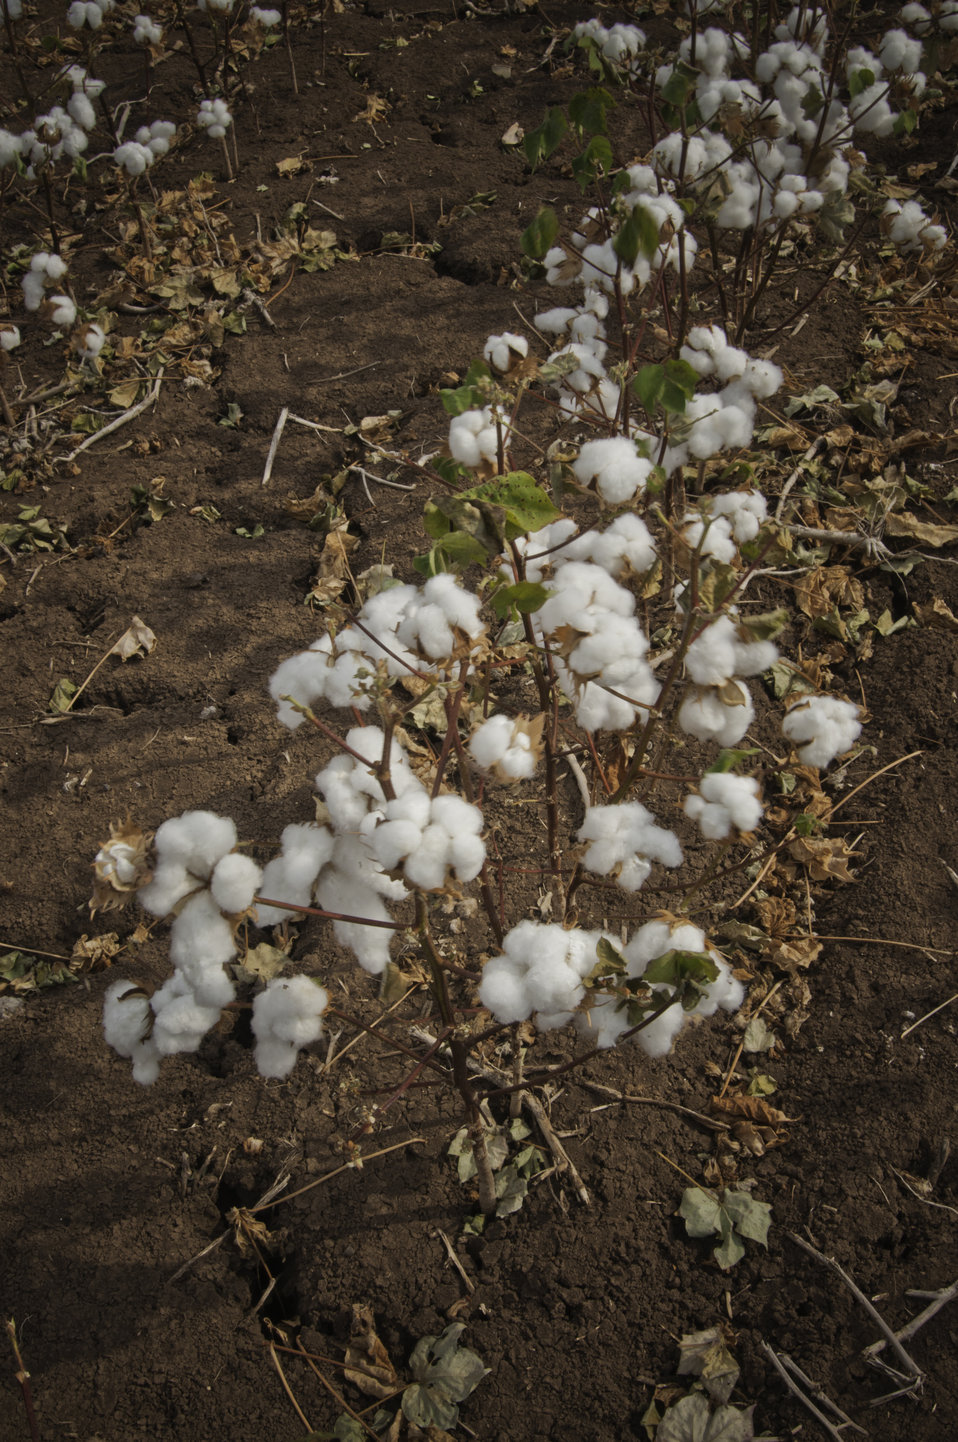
Dry Land cotton grows on a farm in Navasota, TX on Aug. 23, 2013.